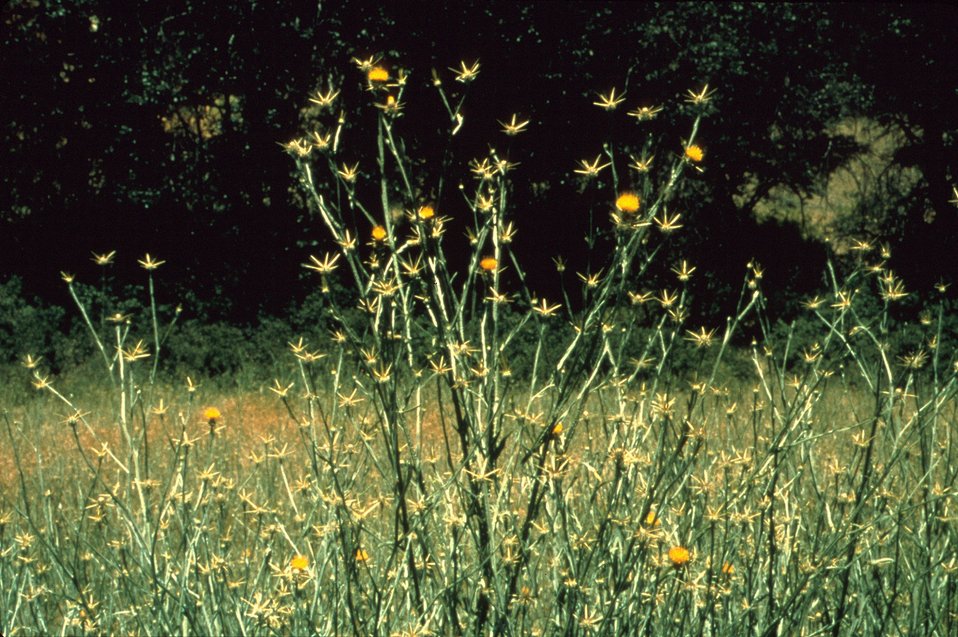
Yellow Starthistle Idaho vegetation Plants in BLM